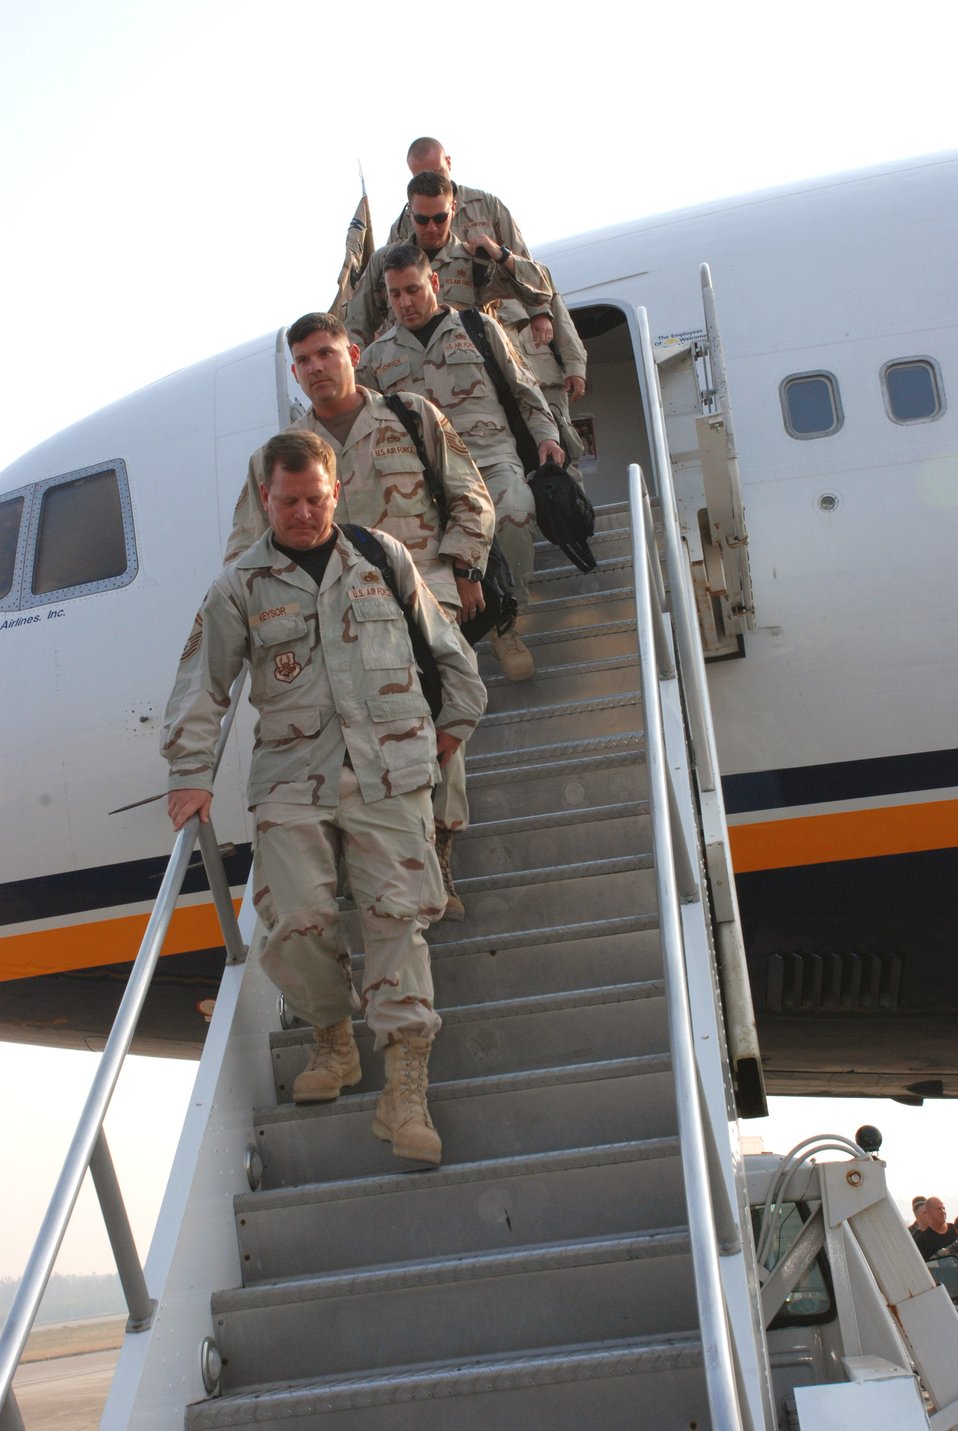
Eglin Airmen return from deployment

Airmen of the 728th Air Control Squadron step off a plane at Eglin Air Force Base, Fla., to end their journey home May 24 from a deployment to Southwest Asia. Family members gathered at Eglin AFB to welcome home more than 175 members of the 728th Air Control Squadron from a deployment in support of Operation Iraqi Freedom.